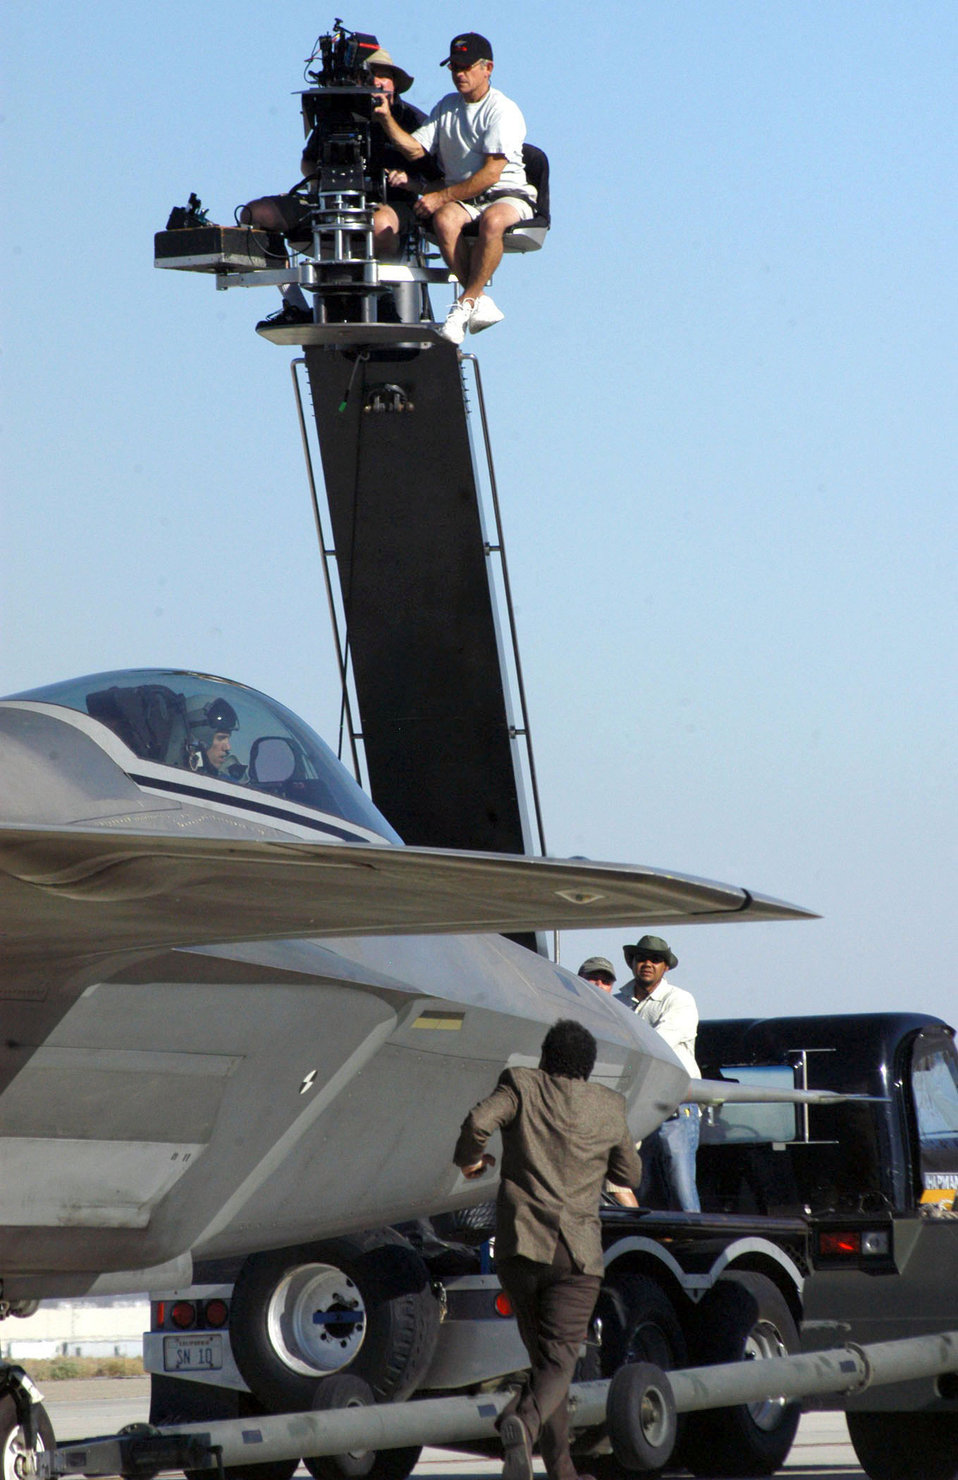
Edwards Airmen help 'Monk' solve mystery

EDWARDS AIR FORCE BASE, Calif. -- NBC Universal cameramen capture the action as actor Tony Shalhoub, who plays detective Adrian Monk, runs to capture the